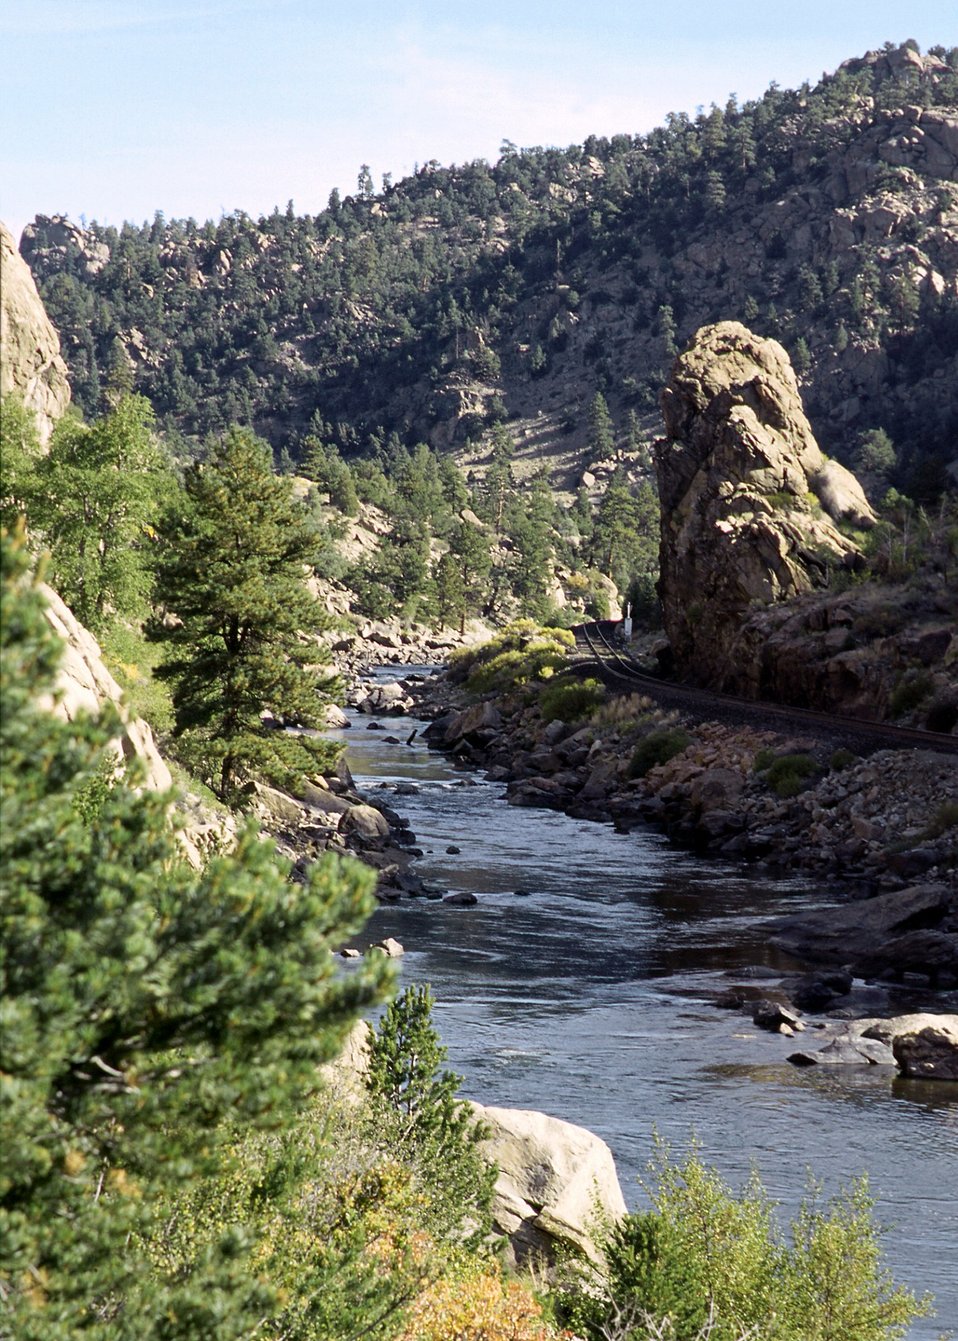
Arkansas (senic) River